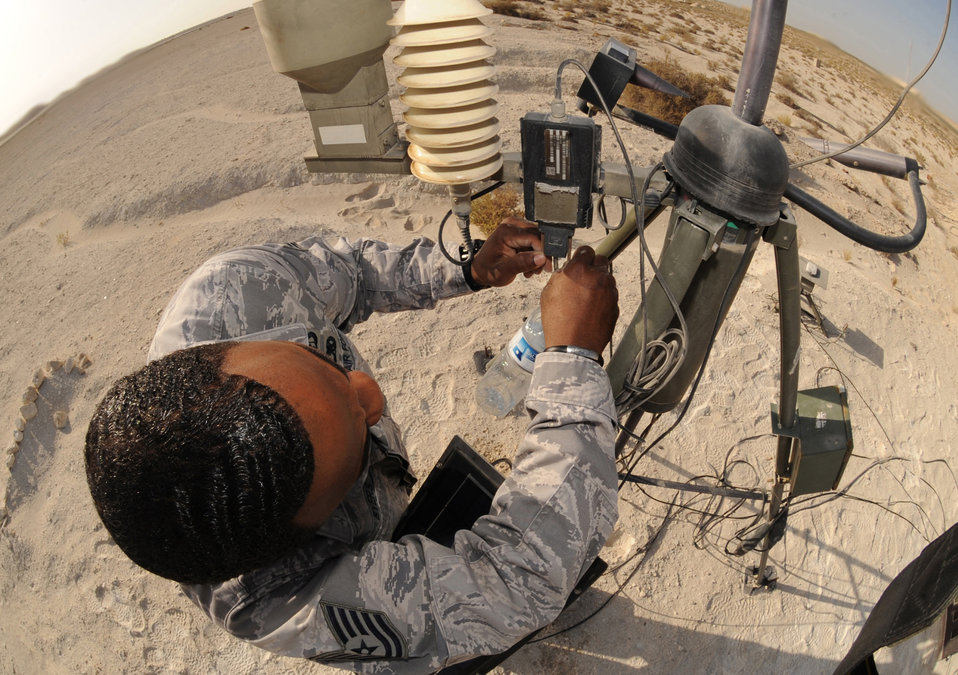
The system is weathering the weather just fine

During a preventative maintenance inspection, Tech. Sgt. Shannon Byers from the 380th Expeditionary Operations Support Squadron at an air base in Southwest Asia ensures the connections on a weather observation system are secure and show no signs of corrosion.